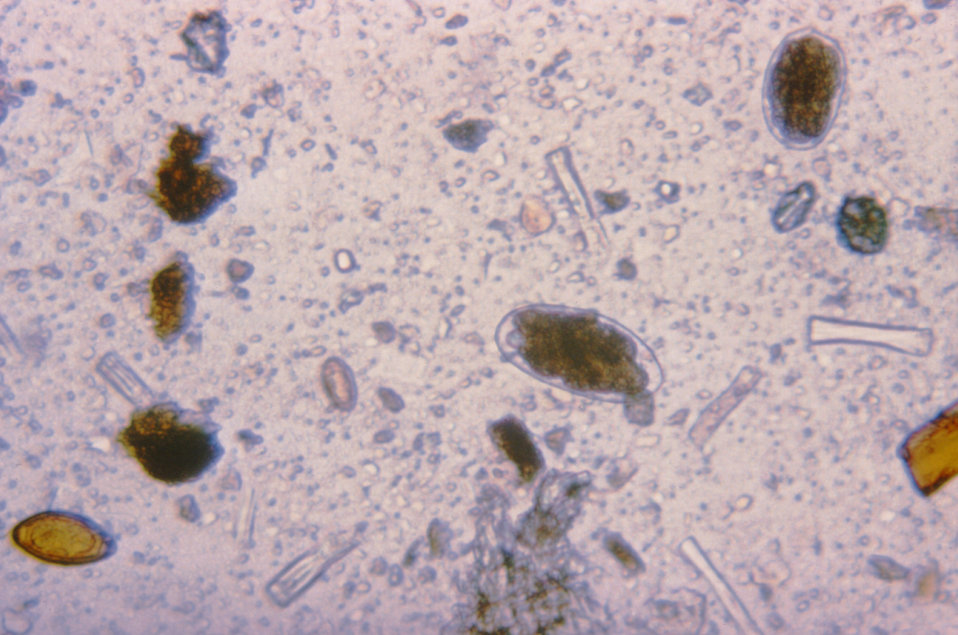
This micrograph shows eggs from a Trichuris sp., a Clonorchis sp., a Trichostrongylus sp. and a hookworm.